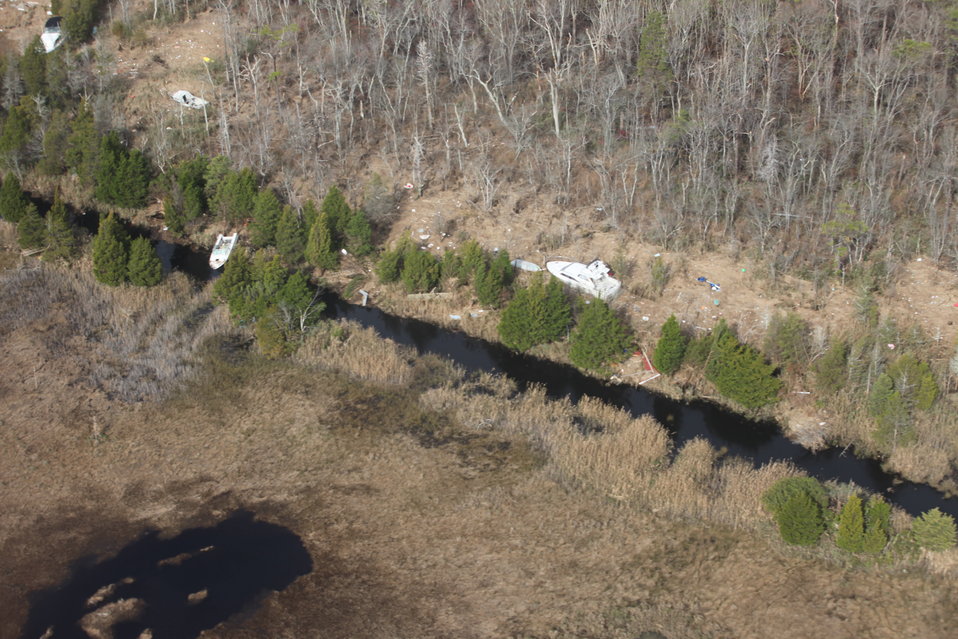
Boats washed ashore on Edwin B. Forsythe National Wildlife Refuge (NJ)

Aerial photo of E.B. Forsythe National Wildlife Refuge taken on 11/2/12.